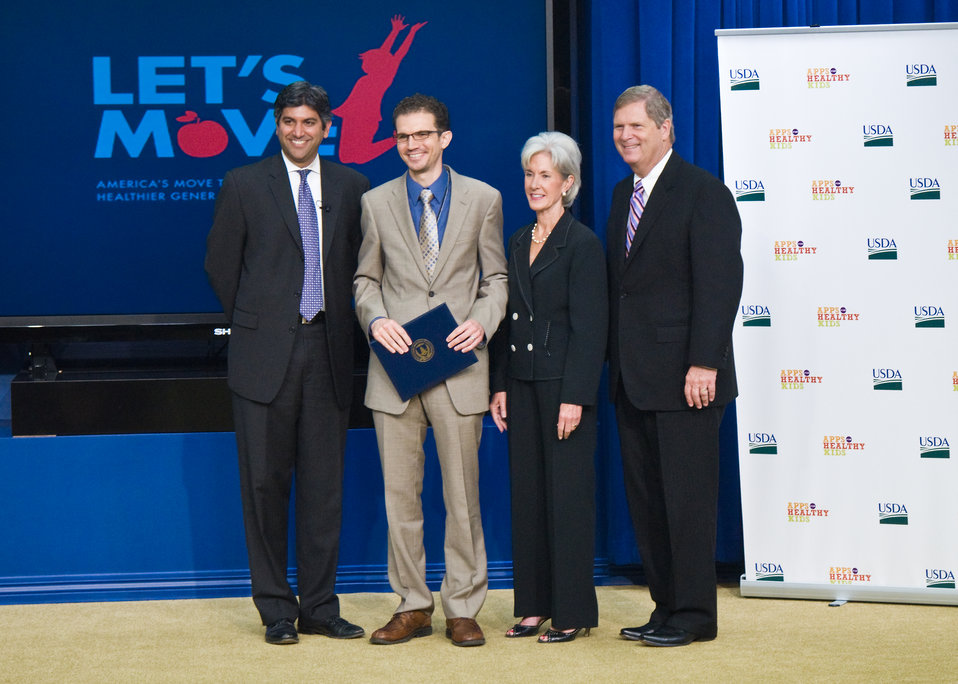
L to R Aneesh Chopra, White House Chief Technology Officer, Health and Human Services Secretary Kathleen Sebelius and Agriculture Secretary Tom Vilsack present the GE Healthymagination Student Award to Trishan de Lanerolle, Hartford, Connecticut, Team Leader of the developers of the app 'Work It Off,' of The Apps for Healthy Kids competition at the White House, in Washington, DC, on Wednesday, September 29, 2010. The Apps for Healthy Kids competition is part of First Lady Michelle Obama’s Let’s Move campaign to end childhood obesity within a generation. The competition challenges software developers, game designers, students and other innovators to develop fun and engaging software tools and games to urge children, especially “tweens” (children ages 9-12) – directly or through their parents – to eat better and be more physically active. The mobile application, 'Work It Off!, is an app for Android phones that teaches children the correlation between the calories they eat and the calories they burn. The user verbally speaks a food into the phone and is given options to Work It Off! It turns learning about calories and exercise into an entertaining, interactive game that kids can play with their friends.. USDA Photo 10di1506-124 by Bob Nichols.